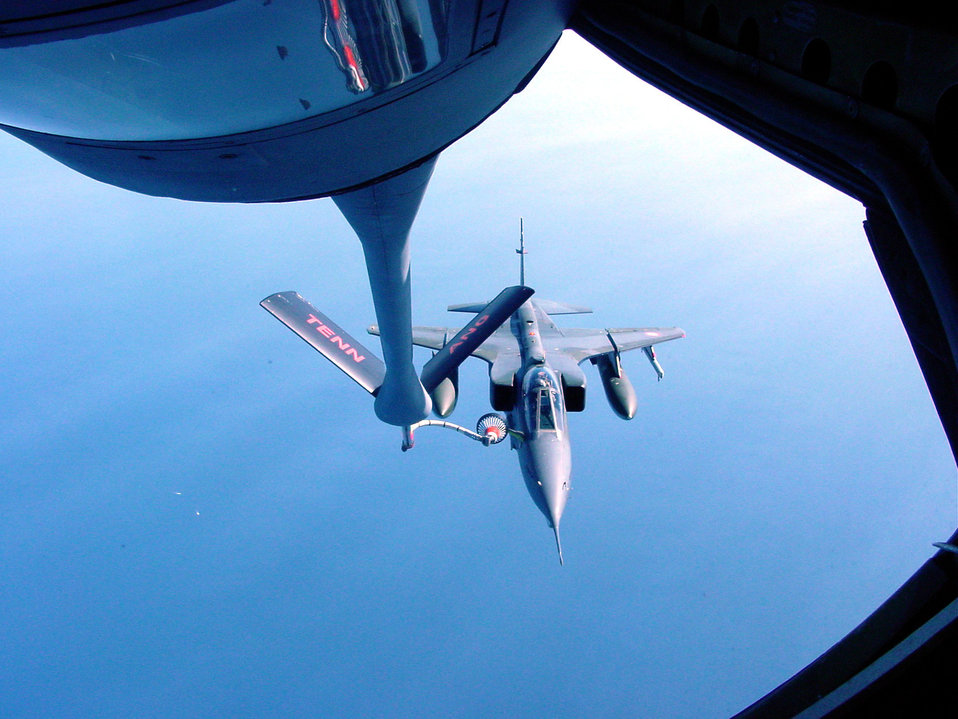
Gas up

OVER FRANCE (AFPN) -- A Tennessee Air National Guard KC-135 Stratotanker refuels a French Jaguar on March 18. Both aircraft are assigned to the 401st Air Expeditionary Wing at Aviano Air Base, Italy, supporting NATO missions in the Balkans.